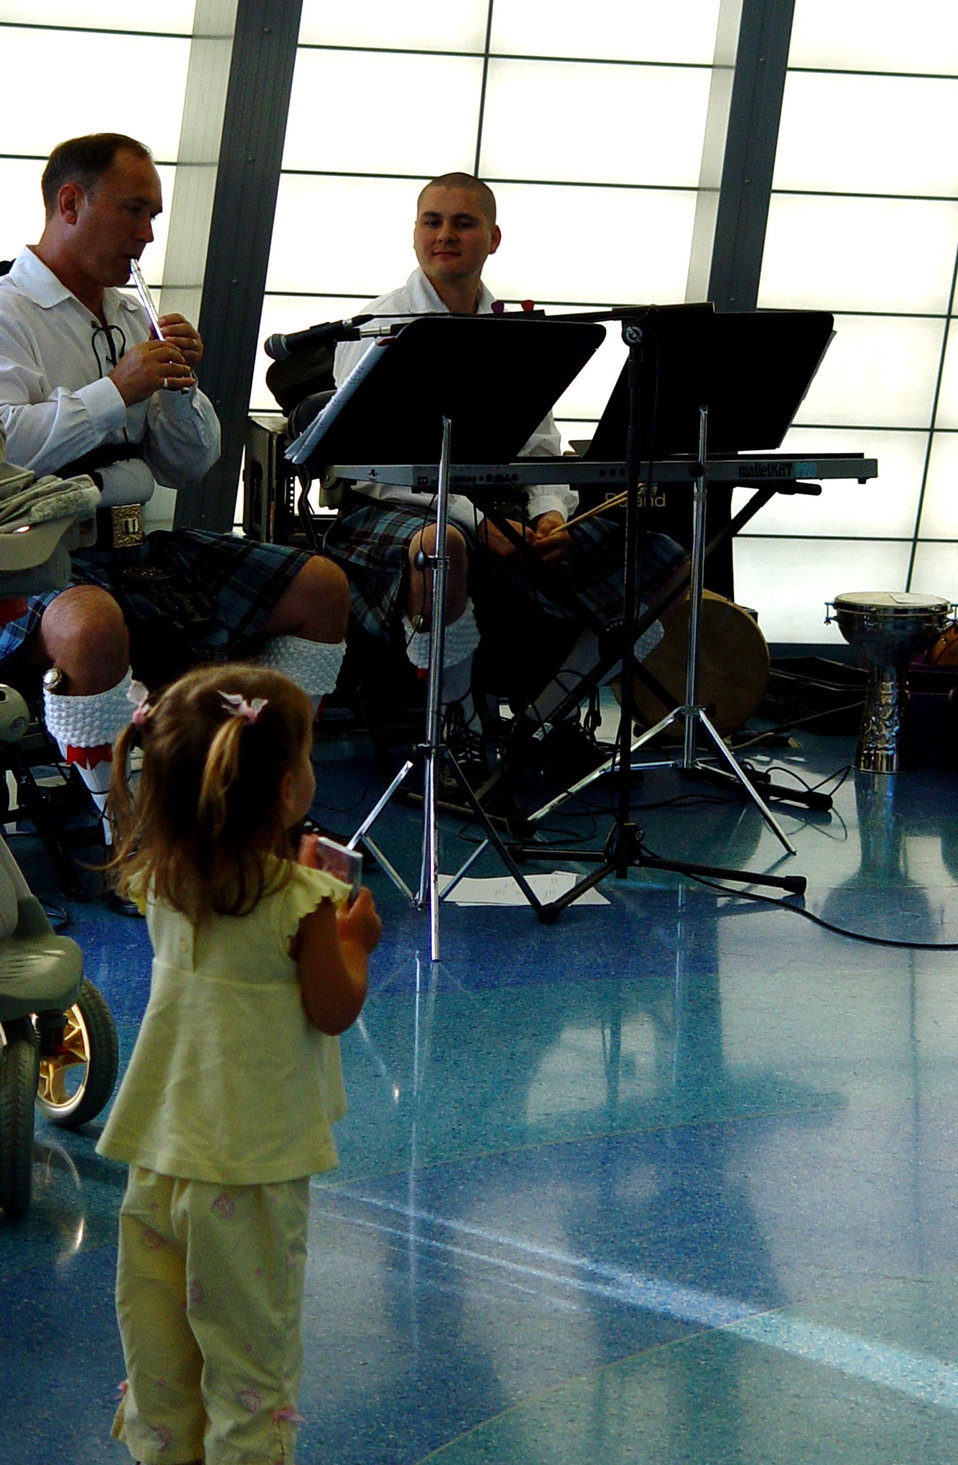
Air Force Reserve Band spreads goodwill

Master Sgt. Scott Gunn and Senior Airman Tim Shaw, members of the Band of the Air Force Reserve's Celtic ensemble, Southern Aire, perform at the Miami Children's Museum on May 19, 2006, as 2 year old Brianna Page looks on. The Band of the Air Force Reserve, from Robins Air Force Base, Ga., performed nine times in South Florida as part of a community outreach project.